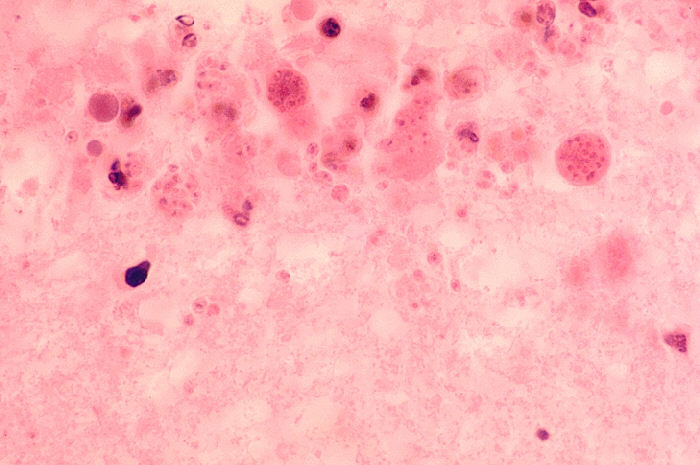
Histopathology of toxoplasmosis of brain in fatal AIDS.